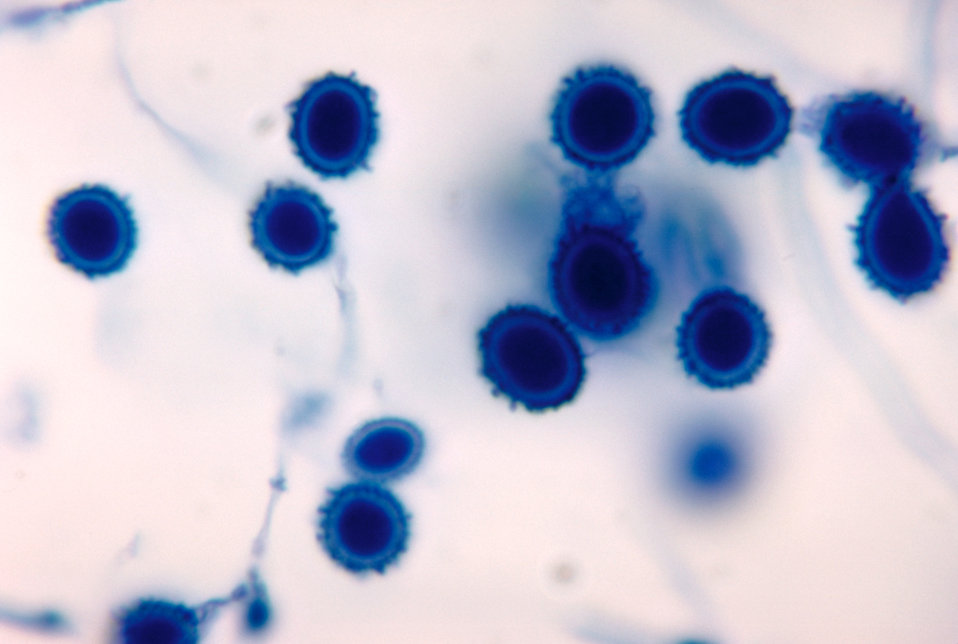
This is a highly magnified photomicrographic view of a number of Ctenomyces serratus conidia.